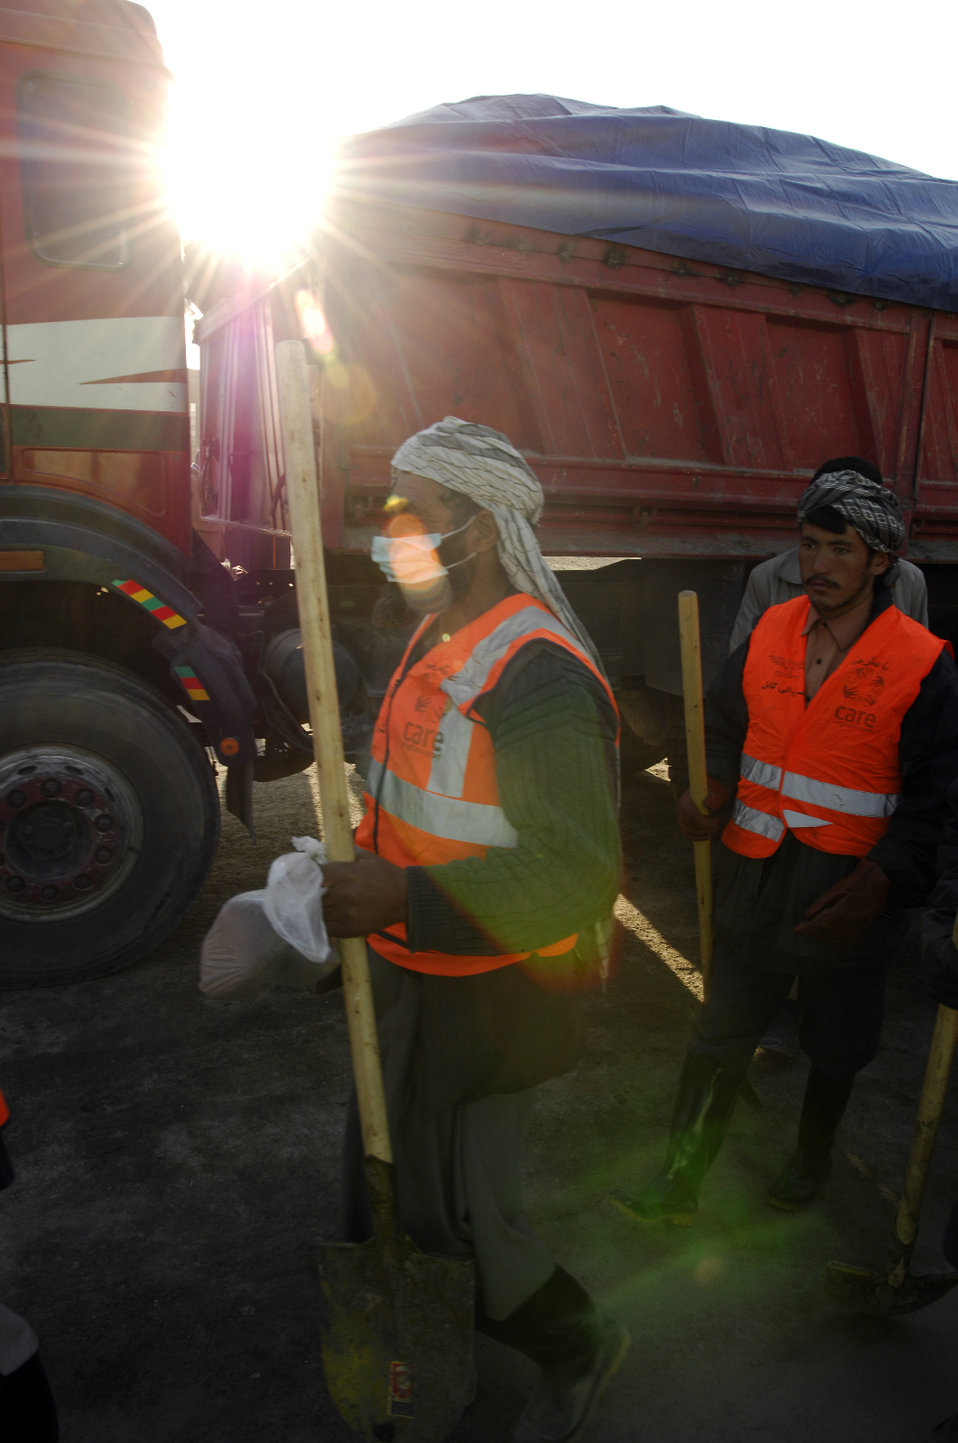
Care54